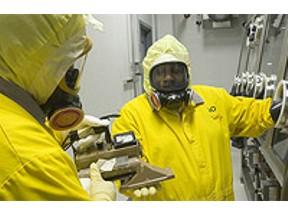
Savannah Safety Training

At the Savannah River Site, like all EM sites, safety is the top priority. A key to safety is proper training. Here, Nuclear Materials Management workers train for safe glovebox operations in the K-area Complex.